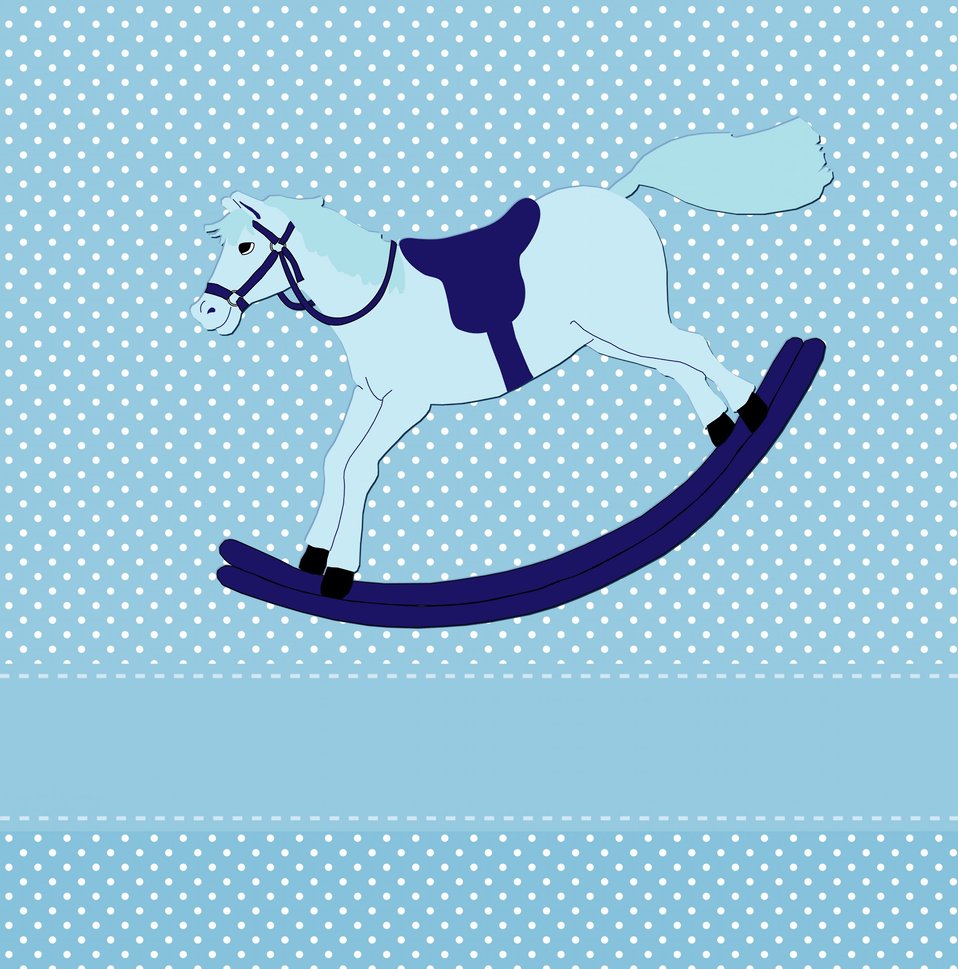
Baby boy arrival card

New baby boy arrival card template with rocking horse and polka dots.